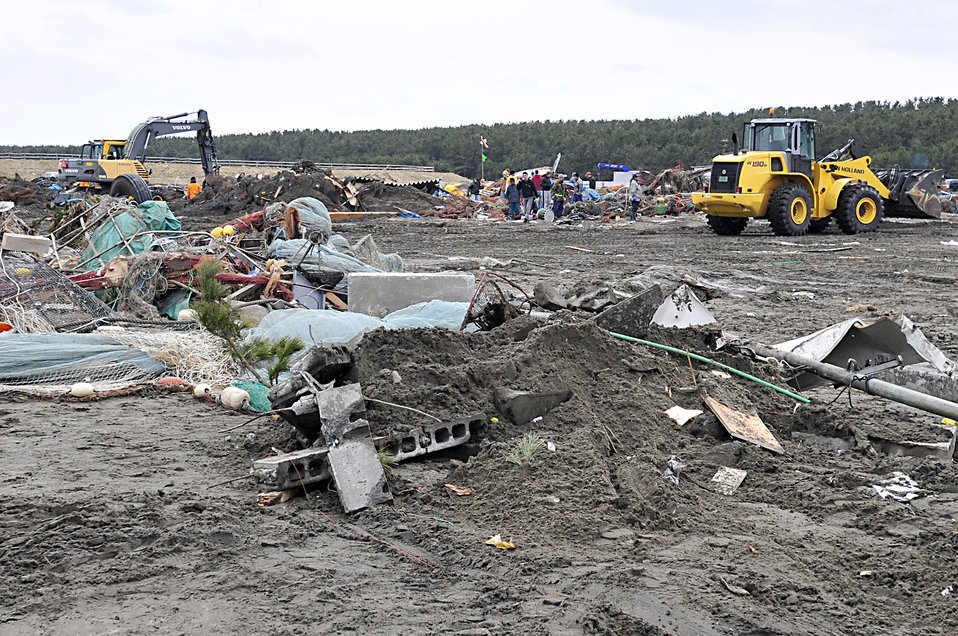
Misawa Air Base lends a helping hand

MISAWA AIR BASE, Japan -- Heavy equipment from Misawa Air Base work to clean up the Misawa City port and beach area Mar. 15. The base residents have shown their commitment to the local community by volunteering their time and showing that a little effort can go a long way.